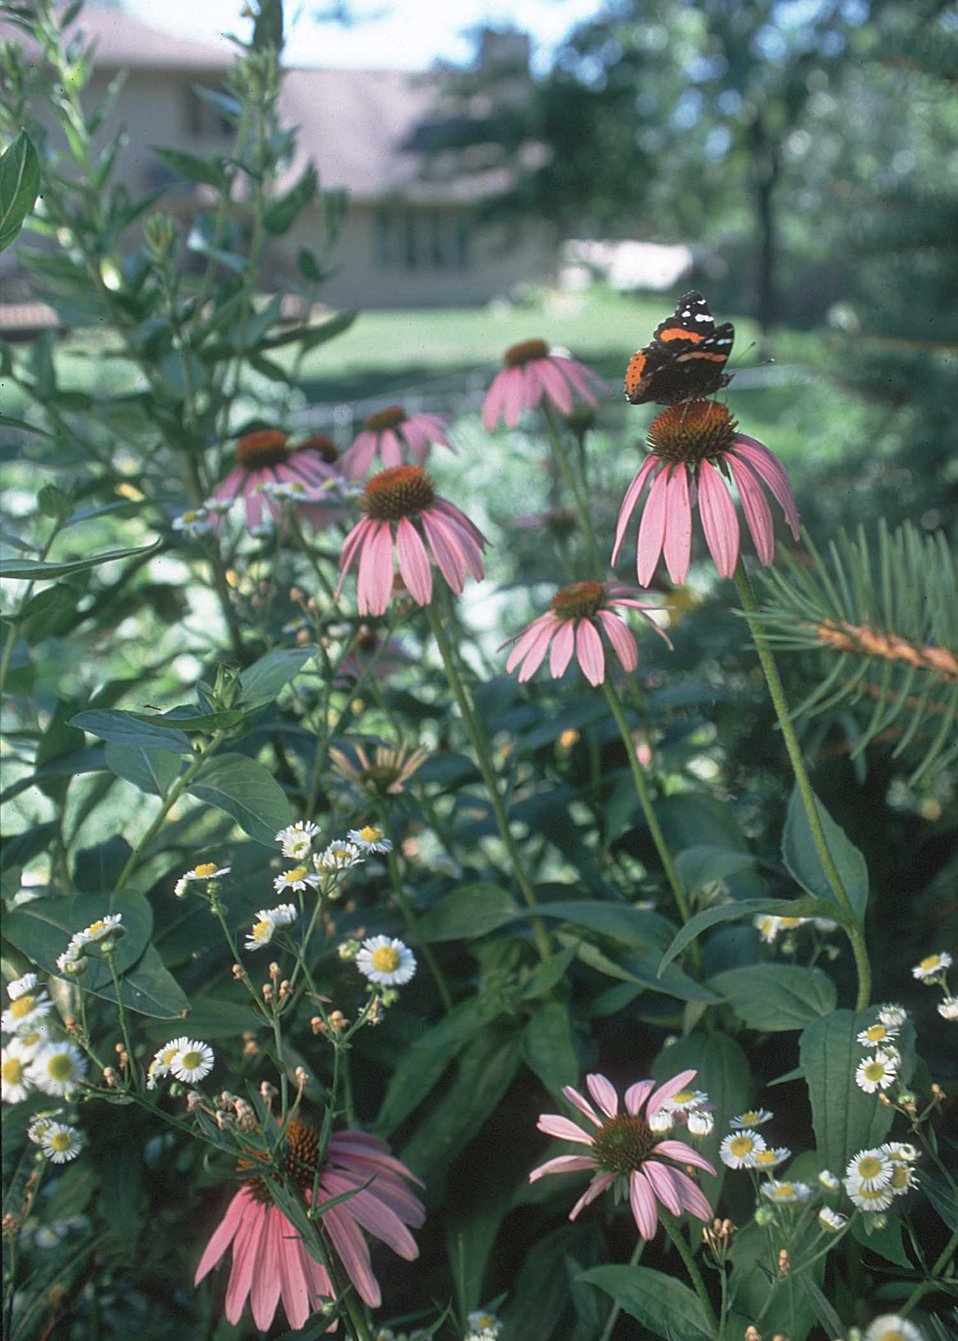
Butterfly pollinating purple coneflower in a back yard in Urbandale, Iowa.